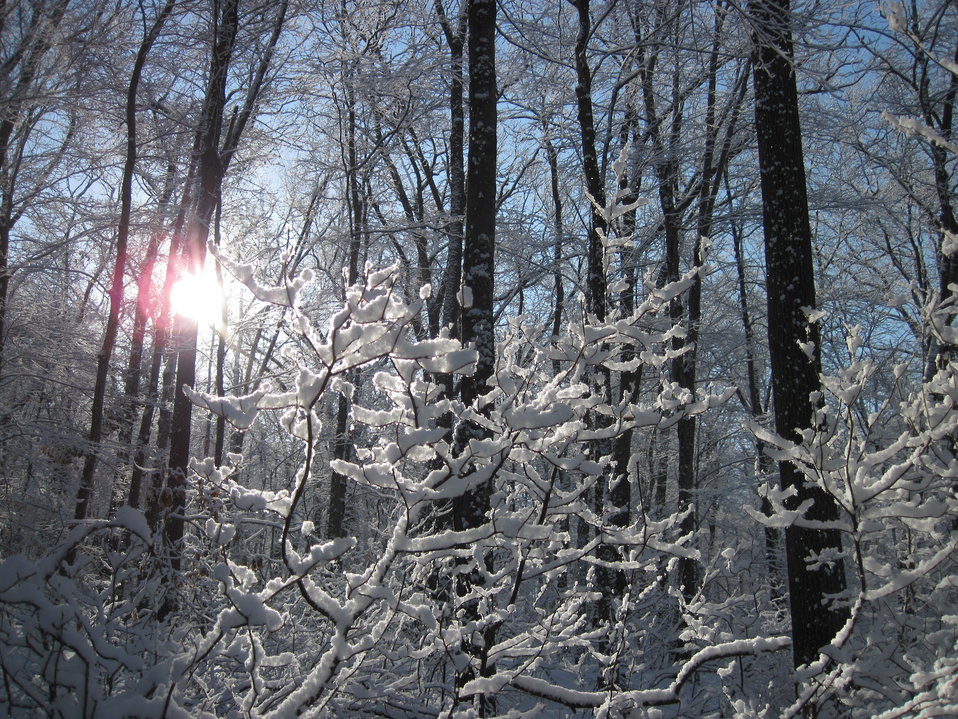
Salt Meadow in winter

Stewart B. McKinney National Wildlife Refuge, CT.